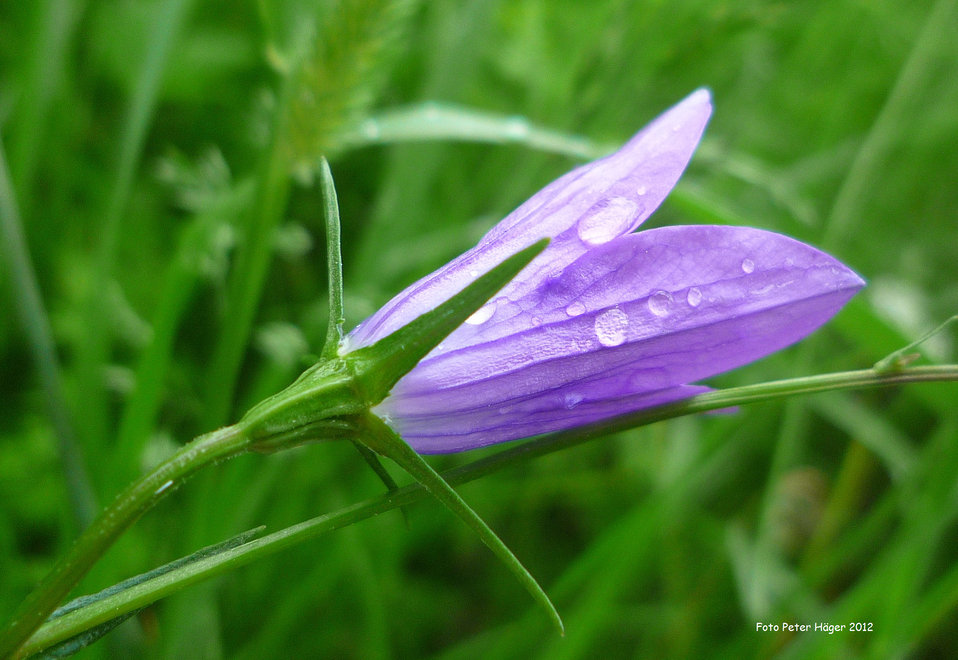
Meadow clock

Campanula patula.